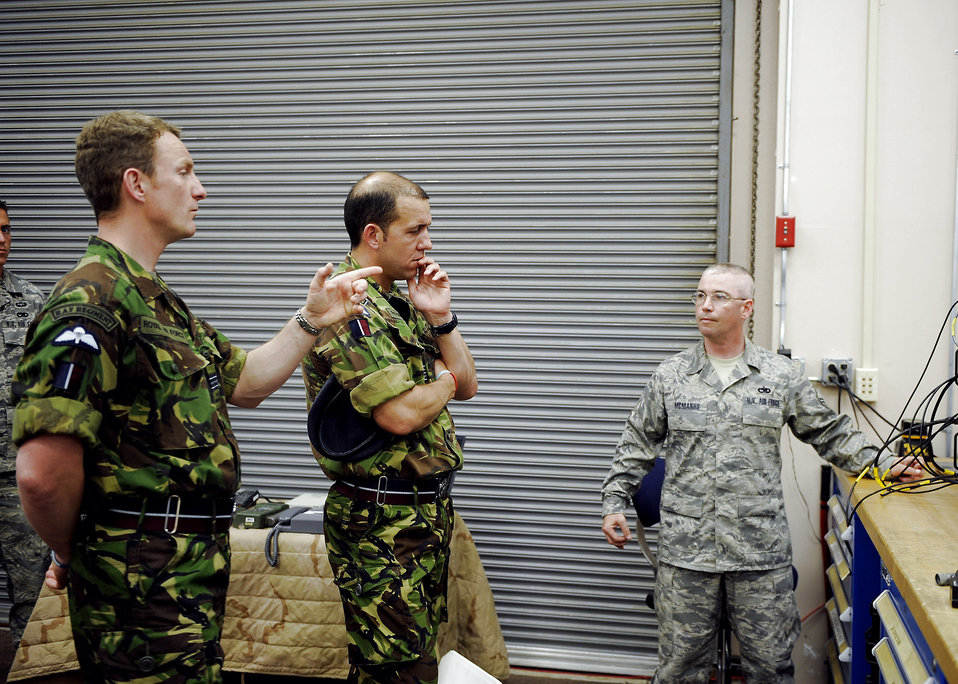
RAF officers spin-up on 820th SFG roles, mission, training

Master Sgt. Thomas McManus briefs two regiment officers from Great Britain's Royal Air Force here May 20. Sergeant McManus explains the different techniques the 820th SFG uses for communication in urban warfare. Sergeant McManus is assigned to the 824th Security Forces Squadron.